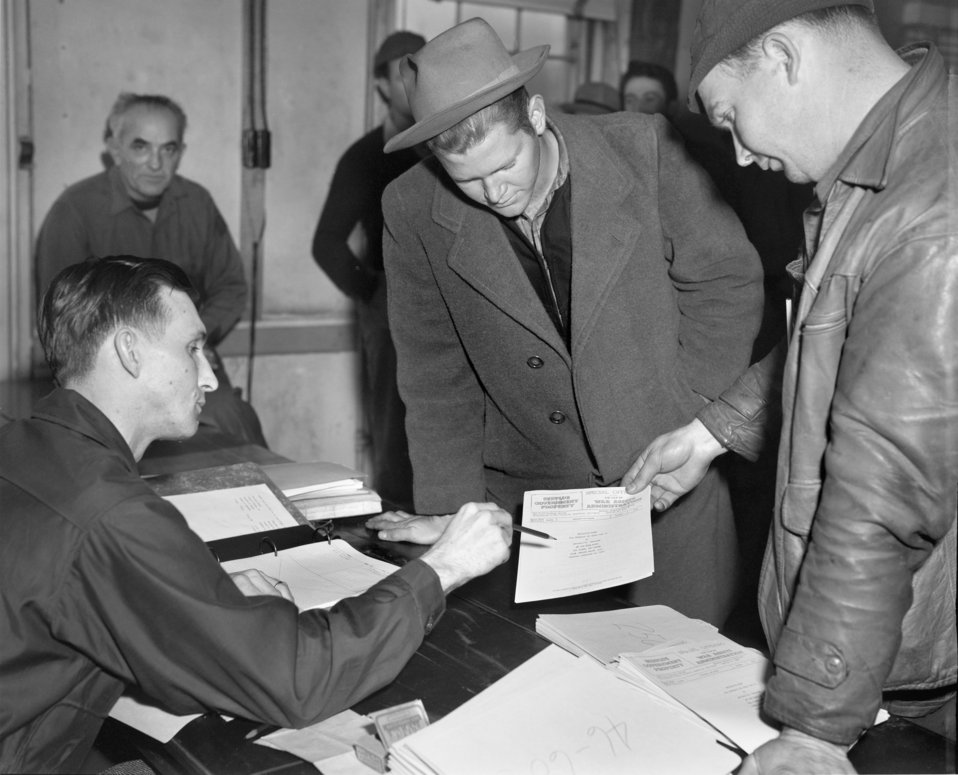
W.A.A. Auto Sale Oak Ridge 1947

3304-5f DOE photo Ed Westcott 2-18-1947 War Assets Administration Exclusive Sale for Vet of WW II Automotive Vehicles at Elza Gate Oak Ridge Tennessee